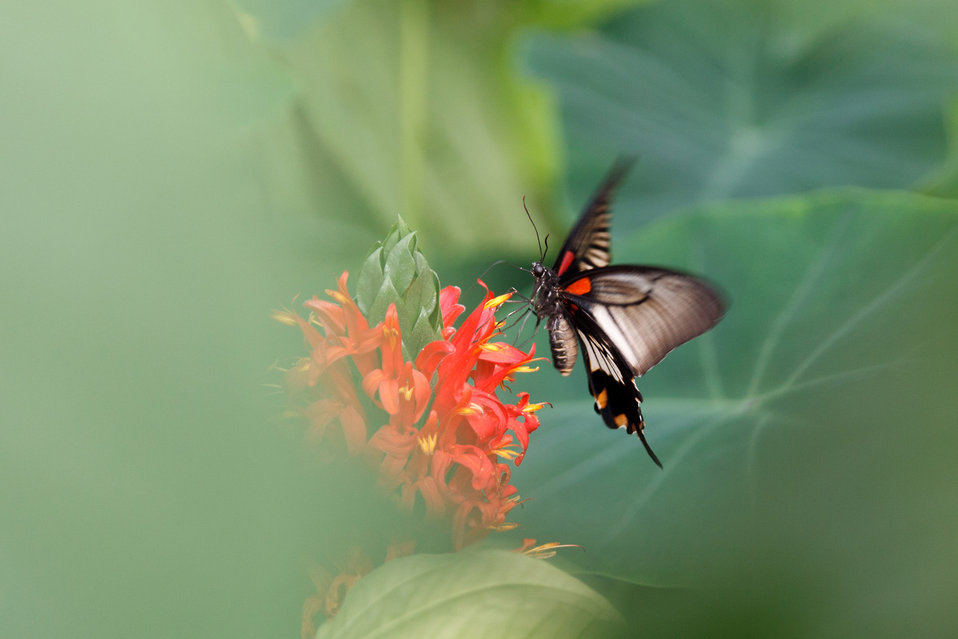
Butterfly on a flower

Tropical butterfly on a flower.